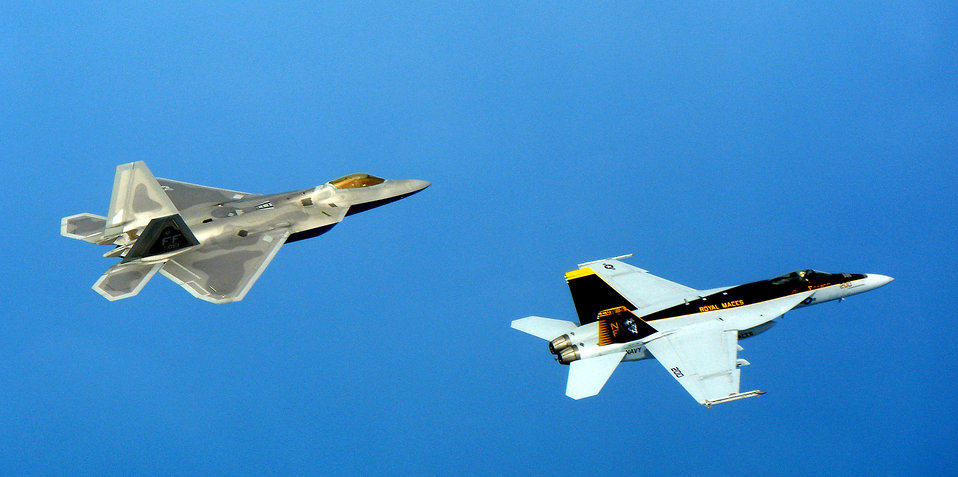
Deployed F-22s leave Pacific, return to Langley

An F-22A Raptor deployed to Kadena Air Base, Japan, trains with a U.S. Navy F/A-18 Super Hornet April 26, near Okinawa, Japan. The Raptors, from the 27th Fighter Squadron, at Langley Air Force Base, Va., deployed to Kadena in February. The Super Hornets, the Navy's newest frontline carrier-based fighter, are stationed at Naval Air Facility Atsugi, Japan. The training exercises focused on the next generation fighter capabilities between the two aircraft.